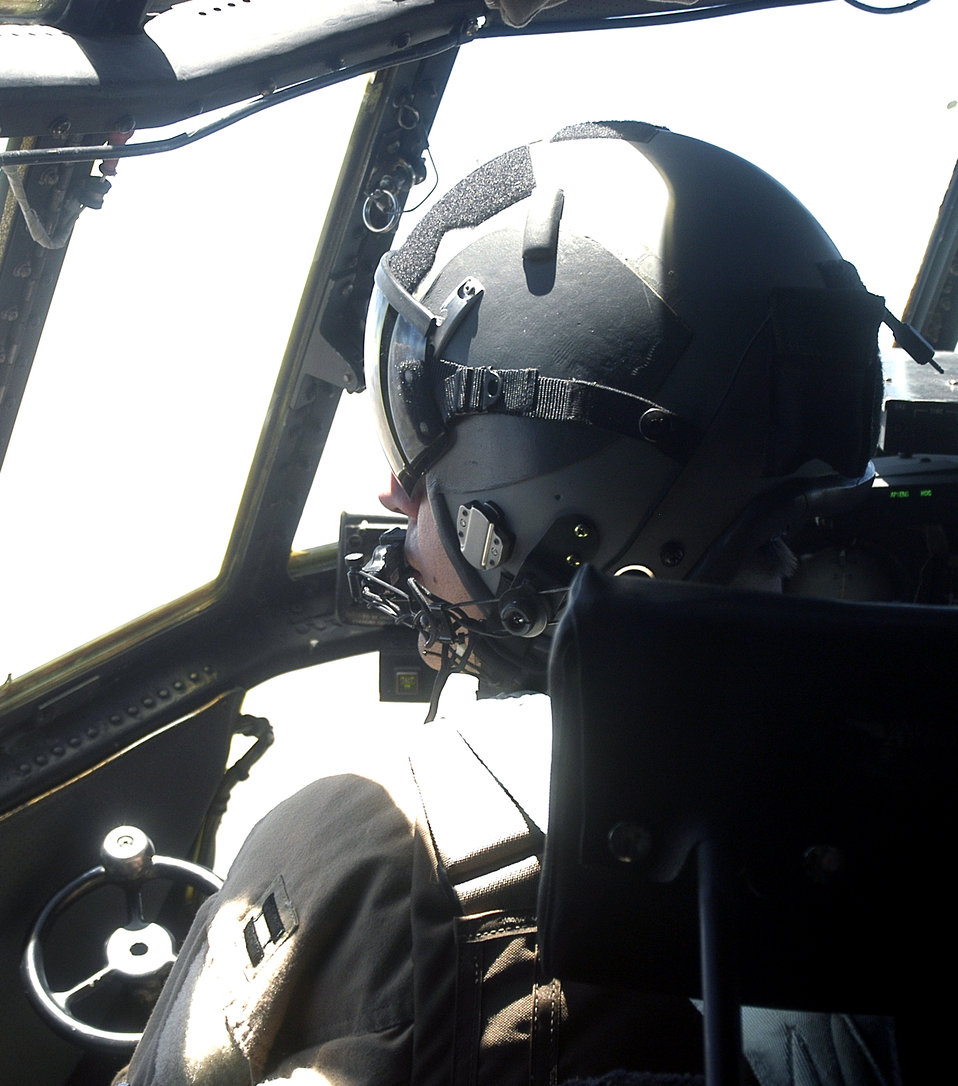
Air Force turns to old standby for Army re-supply

Capt. Andrew Sides scans for another aircraft while flying a C-130 Hercules on a combat mission over Afghanistan in support of Operation Enduring Freedom on Monday, June 19. Captain Sides is a pilot deployed to the 774th Expeditionary Airlift Squadron at Bagram Air Base, Afghanistan, from the Delaware Air National Guard.